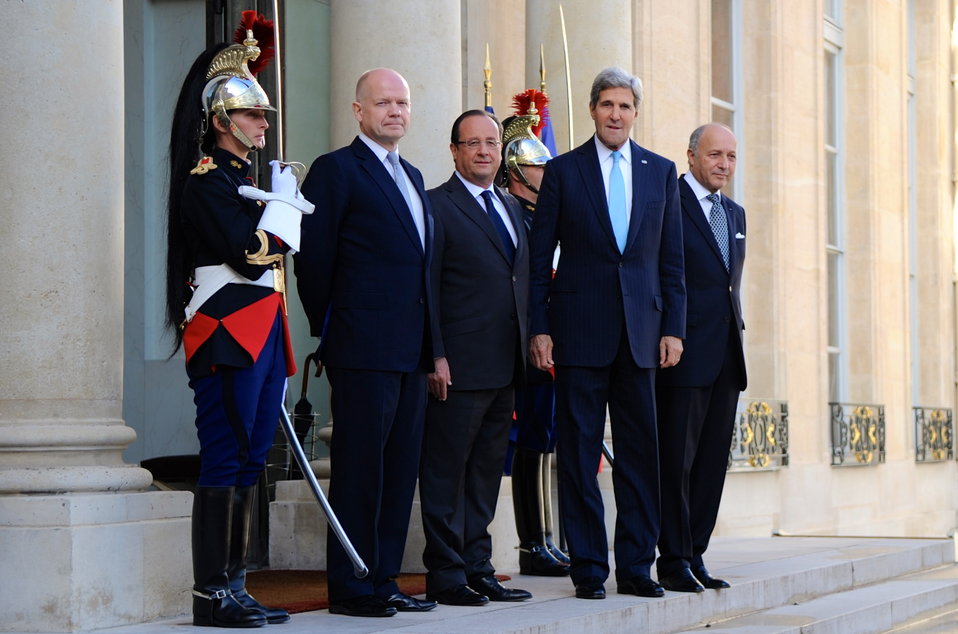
U.S., France, U.K. Meet to Discuss Syria Chemical Weapons

U.S. Secretary of State John Kerry, along with British Foreign Secretary William Hague and French Foreign Minister Laurent Fabius, are welcomed to Elysee Palace by French President Francois Hollande before a P3 meeting, focused on Syria and its chemical weapons stock, in Paris on September 16, 2013.